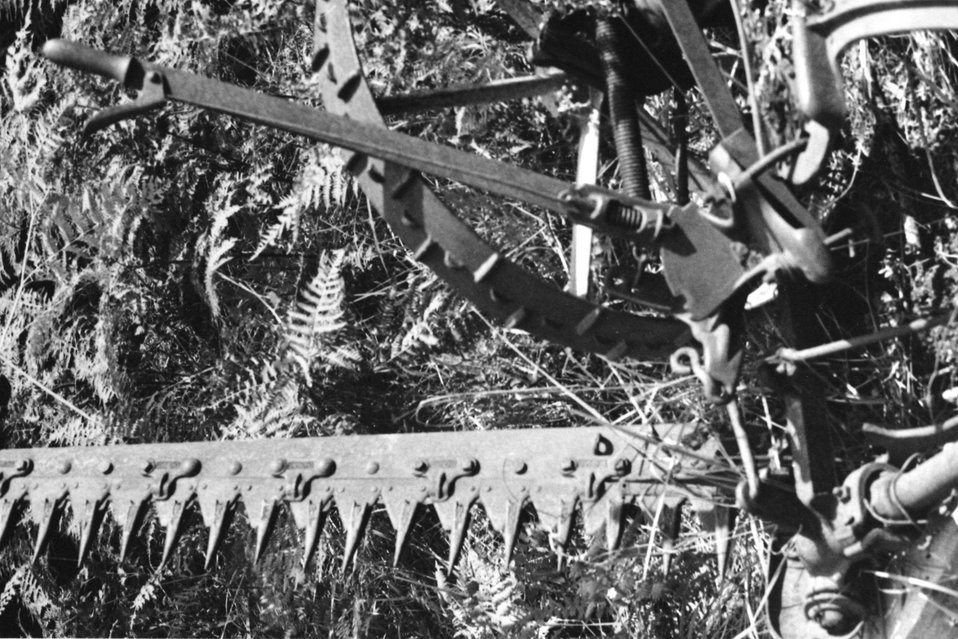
Farm equipment at Mule Creek.